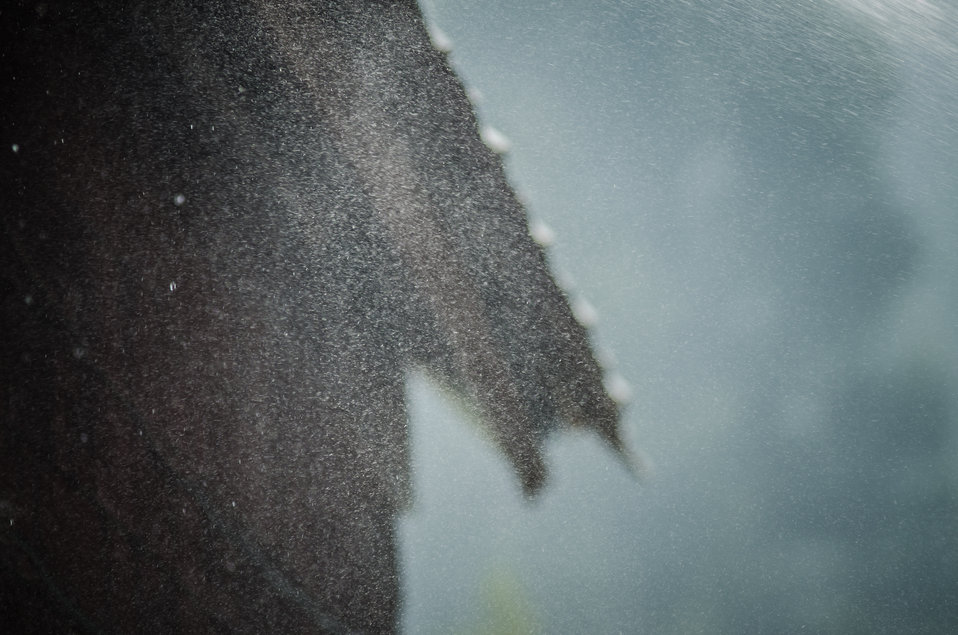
Dale Cramer’s home in Sawyers Bar, CA gets soaked with water in preparation for the possible approach of flames from the Salmon River Complex Fire, in the Klamath National Forest, Tuesday, Aug. 6, 2013. Wildland/structural firefighters went through the town, assessing fire prevention needs and talking with resident about fire prevention measures they are doing on their own as well as other measures they could take to prepare for fire. Actions such as moving away firewood, cutting and clearing plants next to their structures, and using garden hoses to soak structures and grounds all help in the event the main fire comes into their town.
There are two types structure environments in the realm of wildland firefighting.
This urban intermix structural protection environment is generally the more challenging, where structures have been built within a wildland area, isolated to some degree from other structures, but with no separation from wildland fuels (trees, brush and grass). This requires each structure to be assessed on a case-by-case basis. Fire protection measures will be tailored to each situation; defending these structures require a more complex solution, more firefighters, equipment and resources per structure.